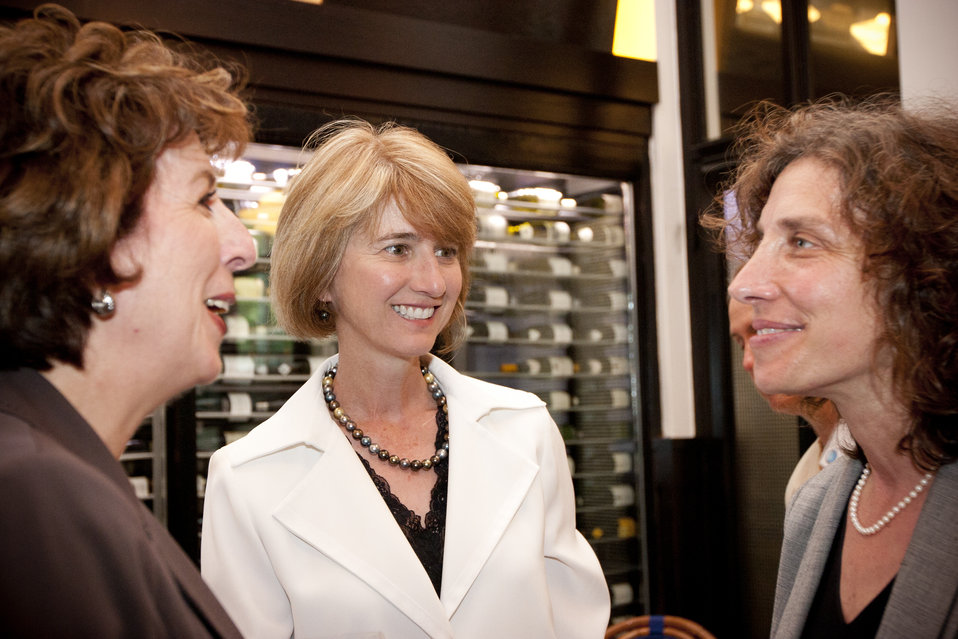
WomenandEnergy 10